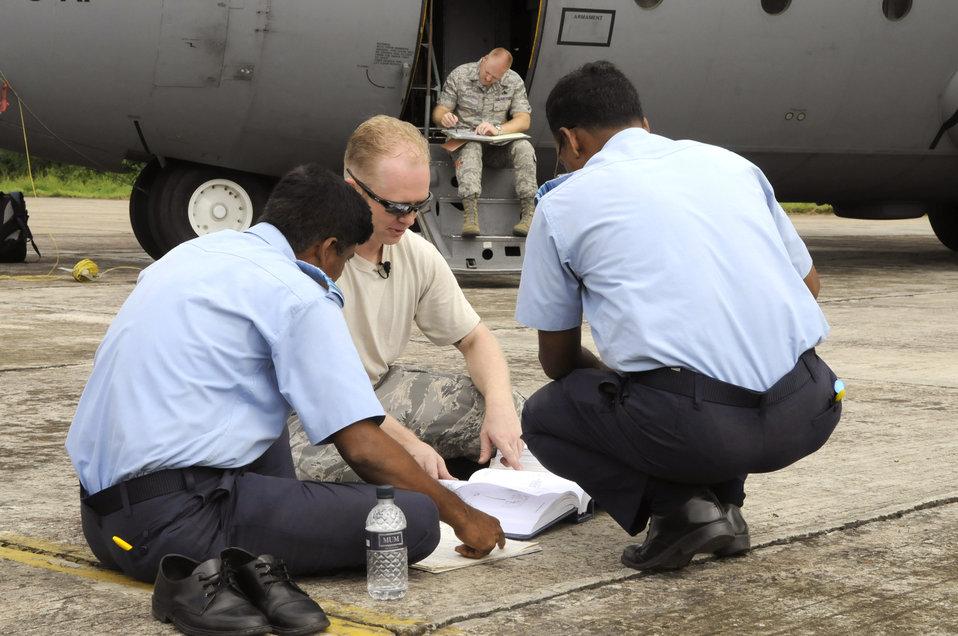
U.S., Bangladesh airmen team up for Cope South 2010

Staff Sgt. Kevin Stubblefield discusses a maintenance problem with Bangladesh air force Military Warrant Officer Abdul Jalil and Military Warrant Officer Golam Faruque, both during exercise Cope South 10 on Sept. 20, 2010, at Kurmitola Air Base, Bangledesh. The bilateral exercise's subject-matter expert exchanges in maintenance, operations and rigging disciplines strengthen the strong and growing partnership between the United States and Bangladesh. Sergeant Stubblefield is an aircraft maintainer from the 374th Maintenance Squadron at Yokota Air Base, Japan. The Bangladesh airmen are aircraft maintainers.